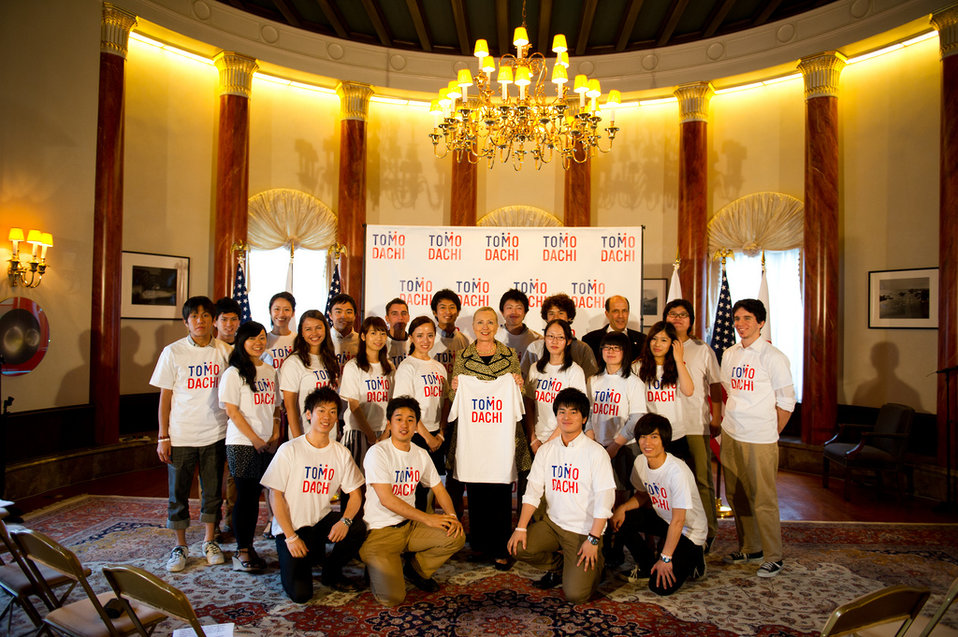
Secretary Clinton With Japanese Youth

U.S. Secretary of State Hillary Rodham Clinton and U.S. Ambassador to Japan John Roos pose for a photo with Tomodachi program youth in Tokyo, Japan, on July 8, 2012.